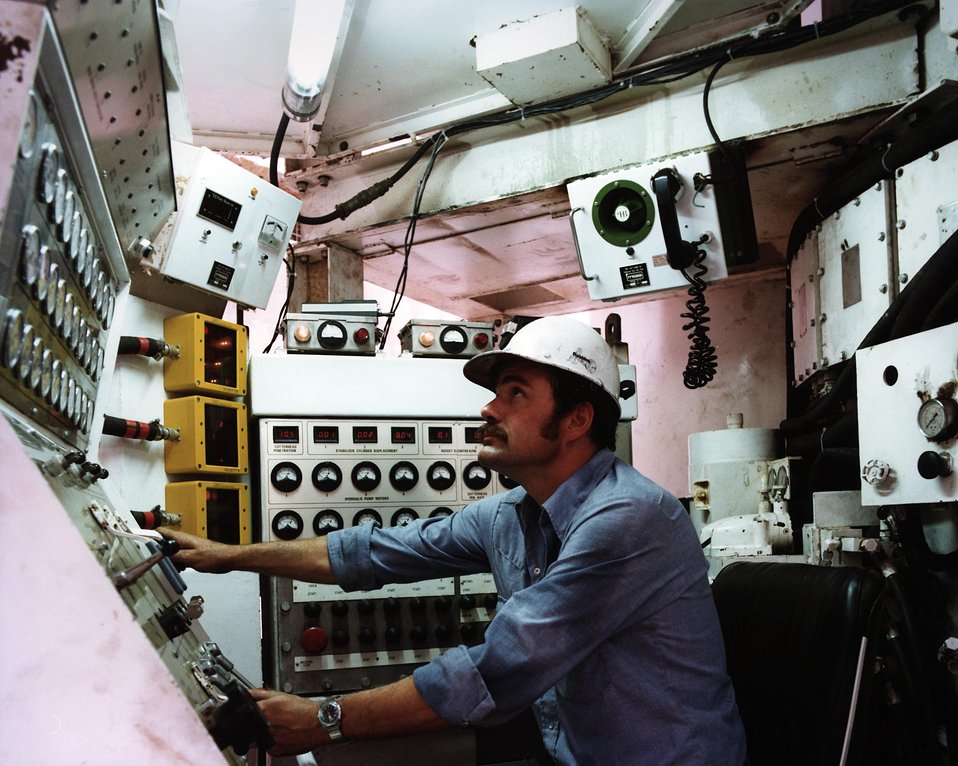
OPERATOR AT THE CONTROLS ABOARD THE BLIND SHAFT BORER.

THE BLIND SHAFT BORER IS A NEW CONCEPT FOR BORING VERTICAL COLE MINE SHAFTS. THE BORER MACHINE IS UNIQUE AS IT IS THE ONLY ONE OF ITS TYPE IN THE WORLD, AND IS EXPECTED TO SIGNIFICANTLY REDUCE THE TIME REQUIRED TO DEVELOP NEW COAL MINES. THE MACHINE IS OVER 24 FEET IN DIAMETER, NEARLY 60 FEET HIGH, WEIGHS 350 TONS, AND CAN BORE 40 FEET PER 24-HOUR DAY. THE TOTAL SYSTEM INCORPORATES CONVENTIONAL HOISTING AND CONCRETE LINING EQUIPMENT. THE INITIAL FIELD TRAIL IS AT U.S. STEELS'S OAK GROVE MINE, AND TESTING STARTED IN EARLY DECEMBER AND WILL CONTINUE INTO THE SPRING OF 1979.